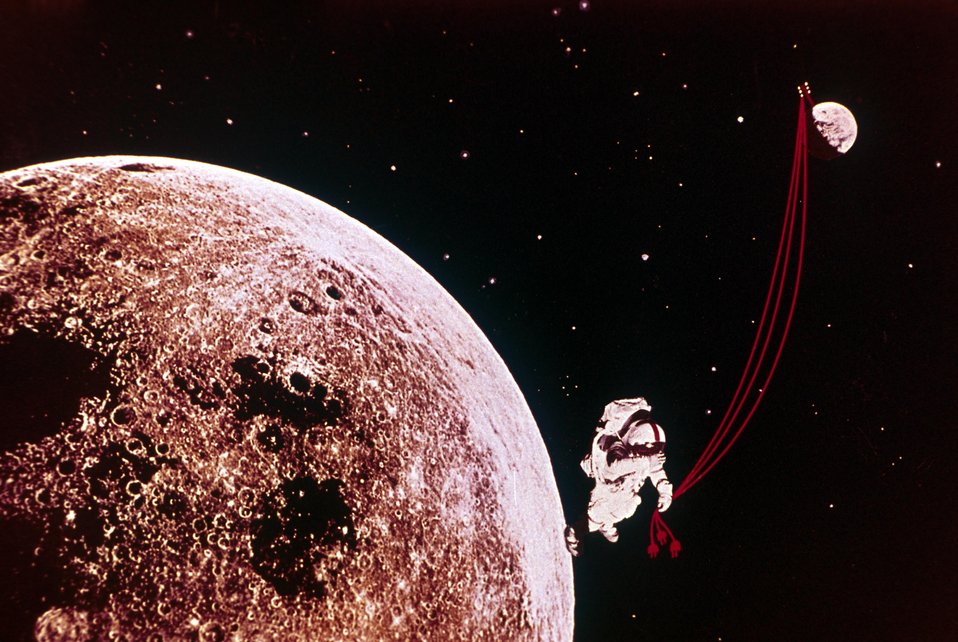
Longueur du du rÐseau de distribution.